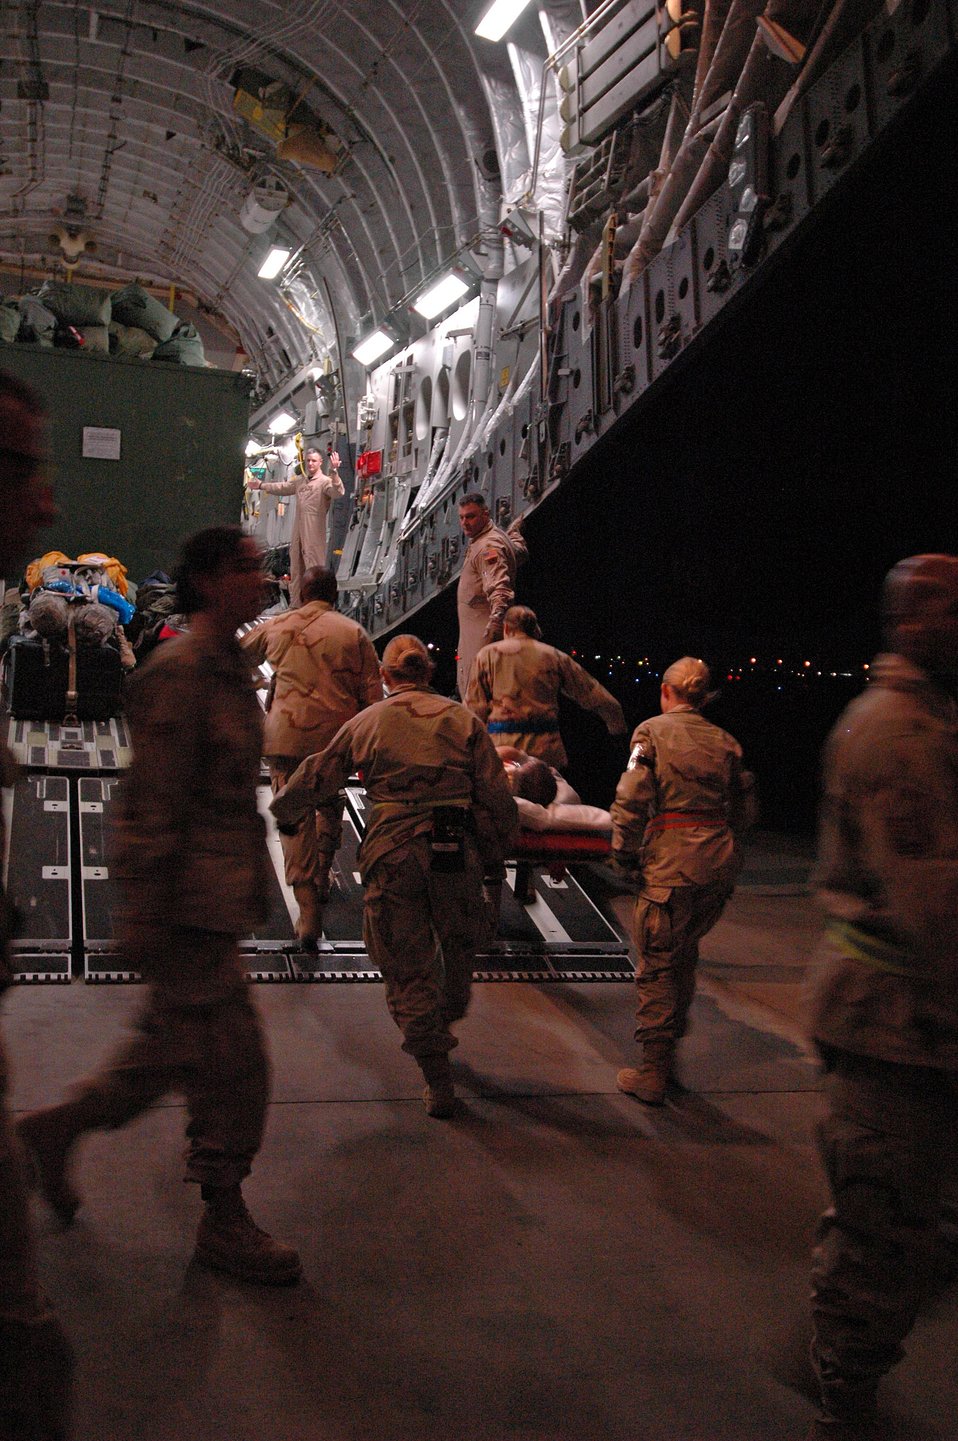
Saving a Soldier

Air Force aeromedical evacuation team members load a patient onto a Mississippi Air National Guard C-17 Globemaster III at Balad Air Base, Iraq, on March 3 during a scheduled flight to Ramstein Air Base, Germany.